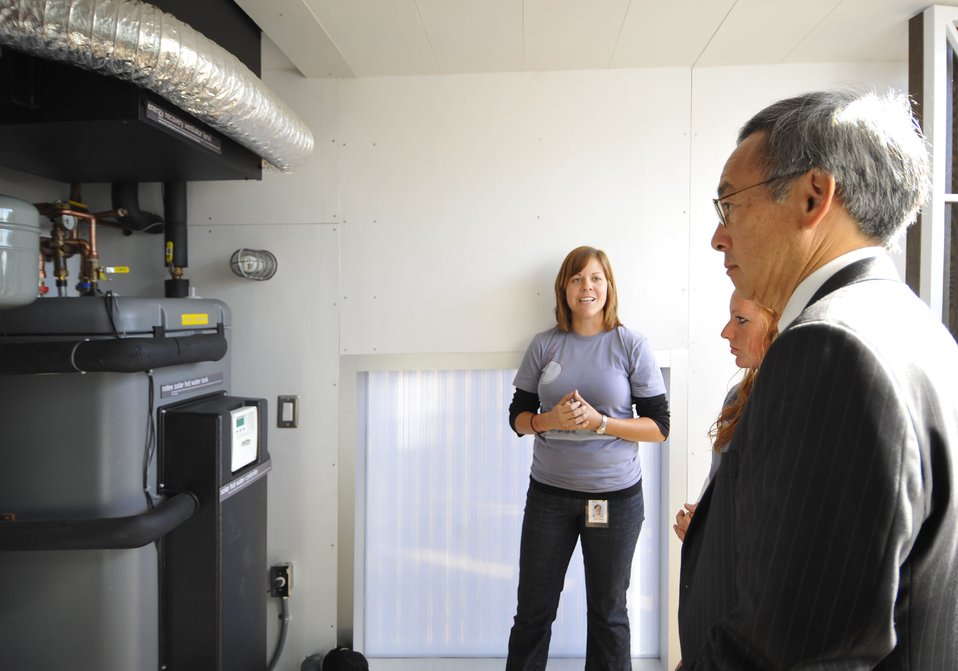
Solar Decathlon 2009 on the National Mall, with Sec. Chu

Solar Decathlon 09